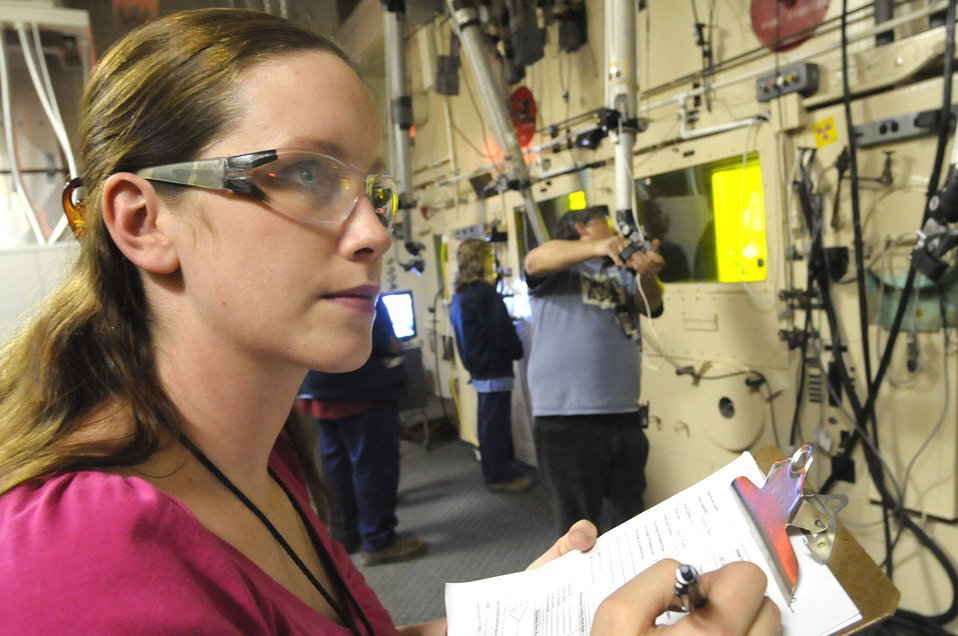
Laney Callahan

Callahan was hired by Argonne in January and now works as a project specialist in the area of waste removal. Her efforts helped the lab reclassify a key portion of a building—Building 205, K Wing--as a 'radiological facility' after contaminants were removed from the site.